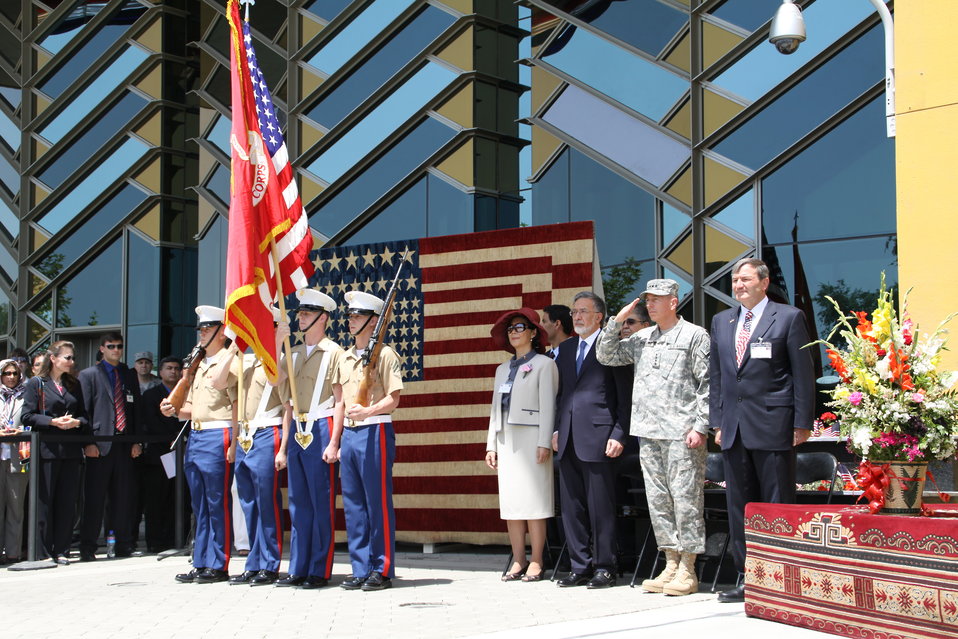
Kabul Official July 4th Celebration